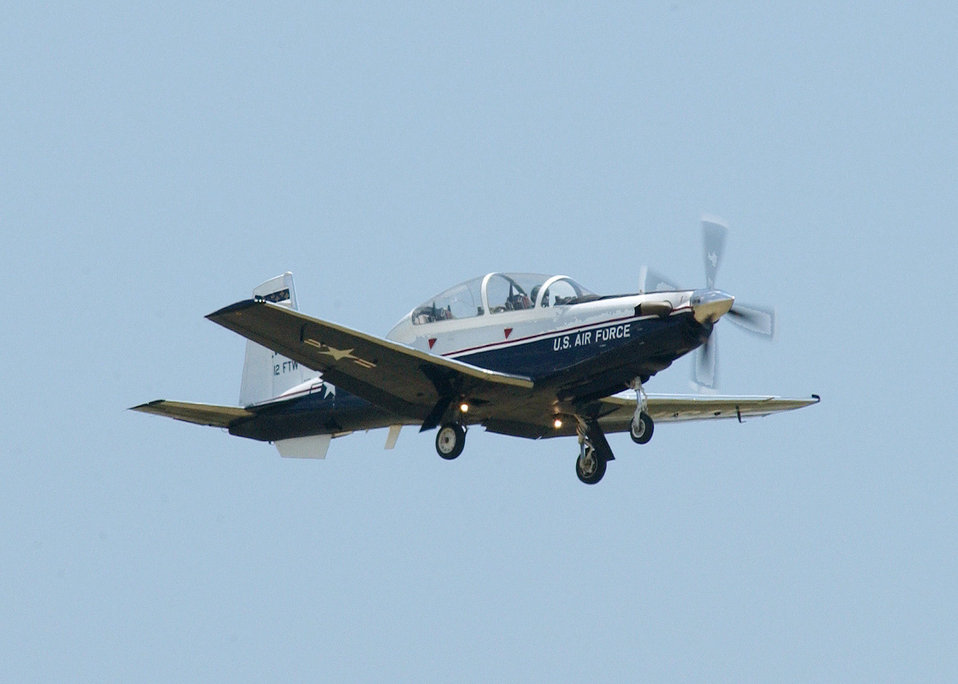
Gear down pass

RANDOLPH AIR FORCE BASE, Texas -- The T-6A Texan II performs a